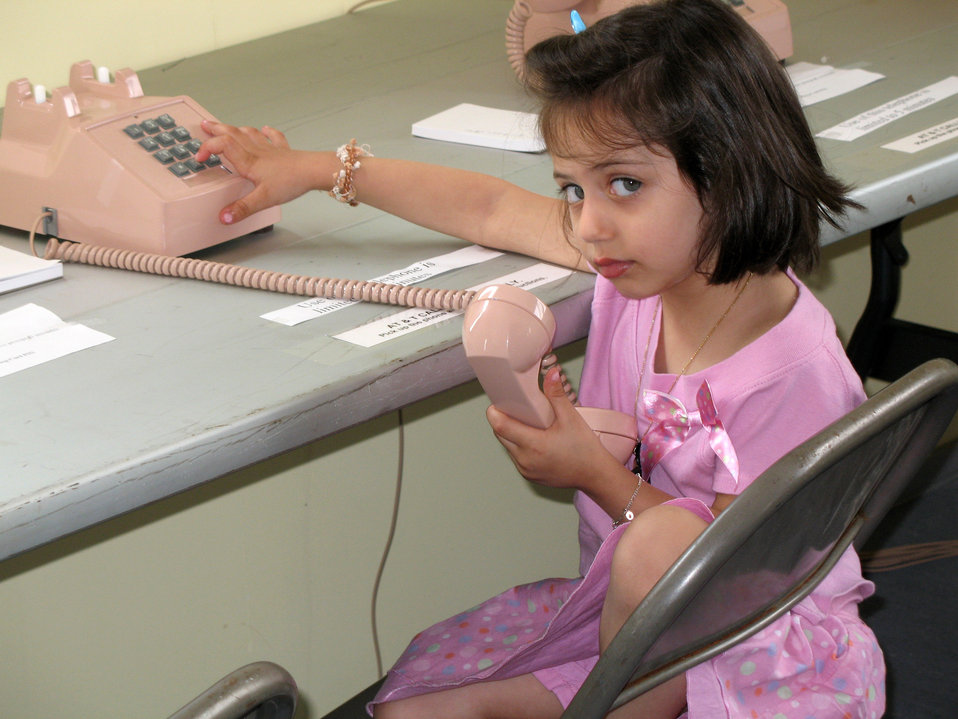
Care and comfort at Incirlik

A young American who departed Lebanon plays with a telephone at Incirlik Air Base, Turkey, on July 22. The base has provided telephones, Internet service, television, beds and showers to the displaced American citizens while they wait to travel to the United States.